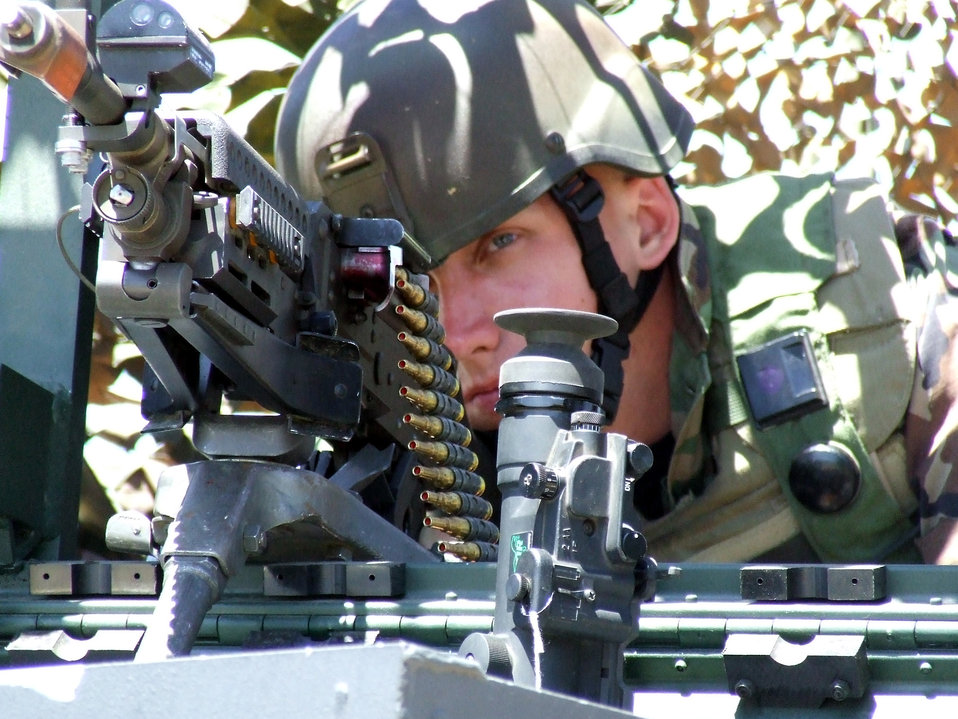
Eagle Flag takes flight

Airman 1st Class William Carson takes aim with a blank-round-equipped M-60 machine gun at a security checkpoint for the contingency response group at Naval Air Engineering Station Lakehurst, N.J., June 23. Airman Carson is assigned to the 818th Global Mobility Readiness Squadron at McGuire Air Force Base, N.J. He participated in Exercise Eagle Flag 07-5, operated by the U.S. Air Force Expeditionary Center at Fort Dix, N.J.